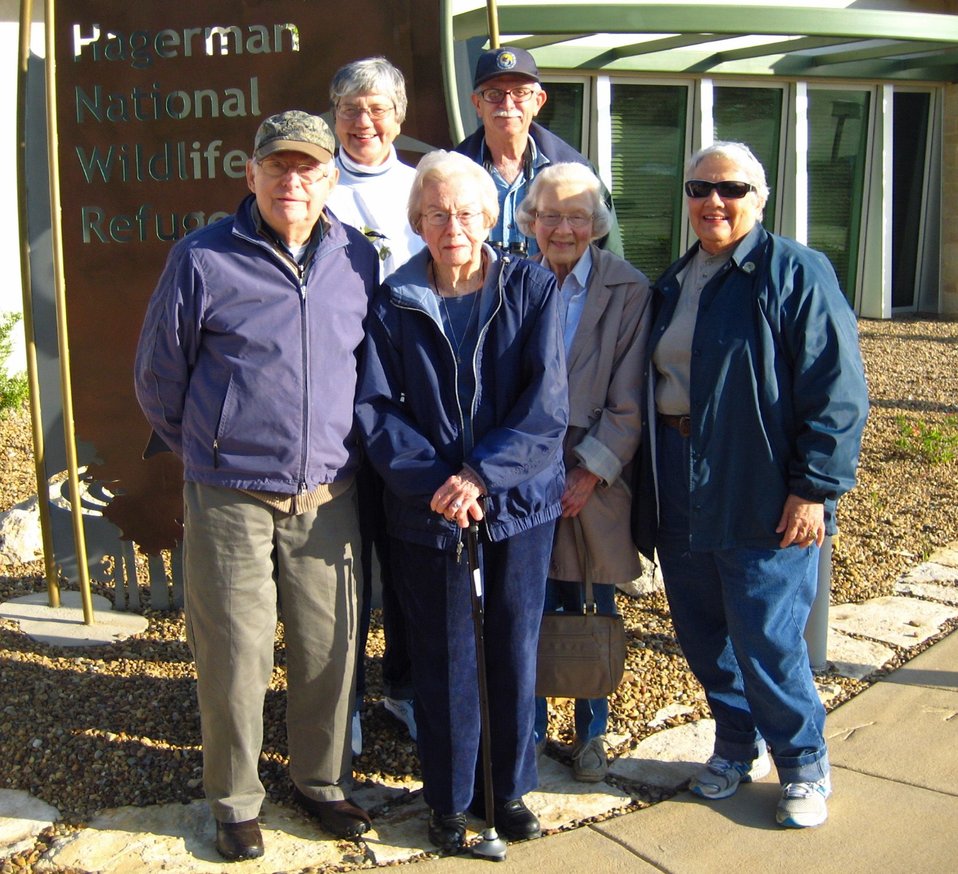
Karl outside 2